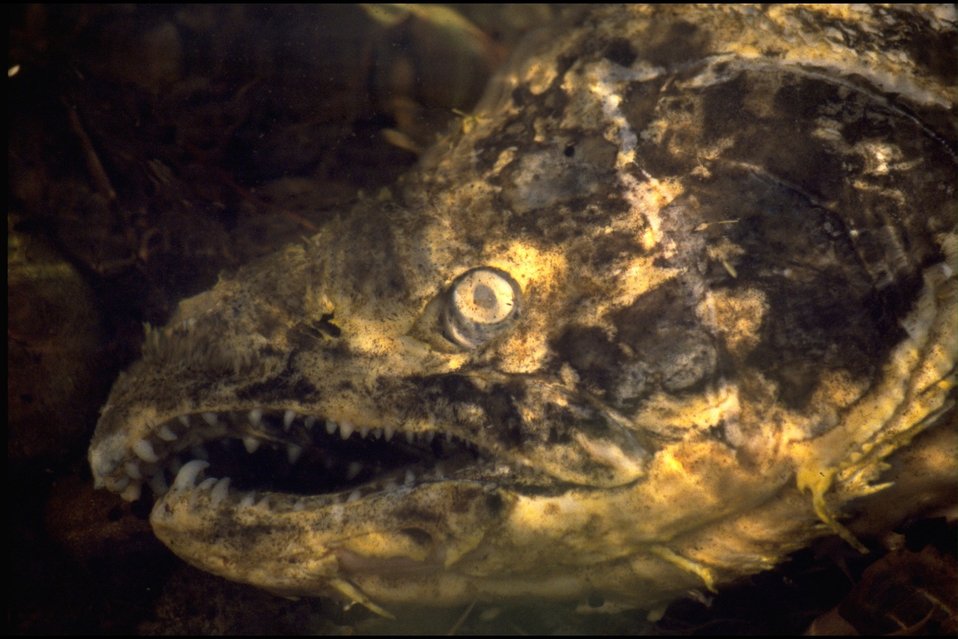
Salmon Watch Program (Fish Creek) - Crow/Applegate Schools.